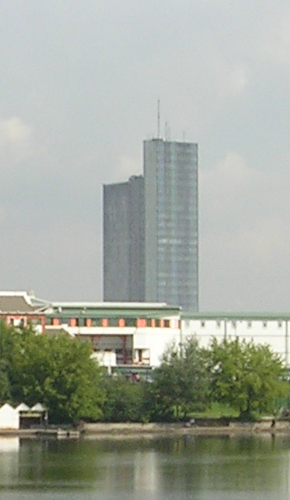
Main building of 'Delta', research institute